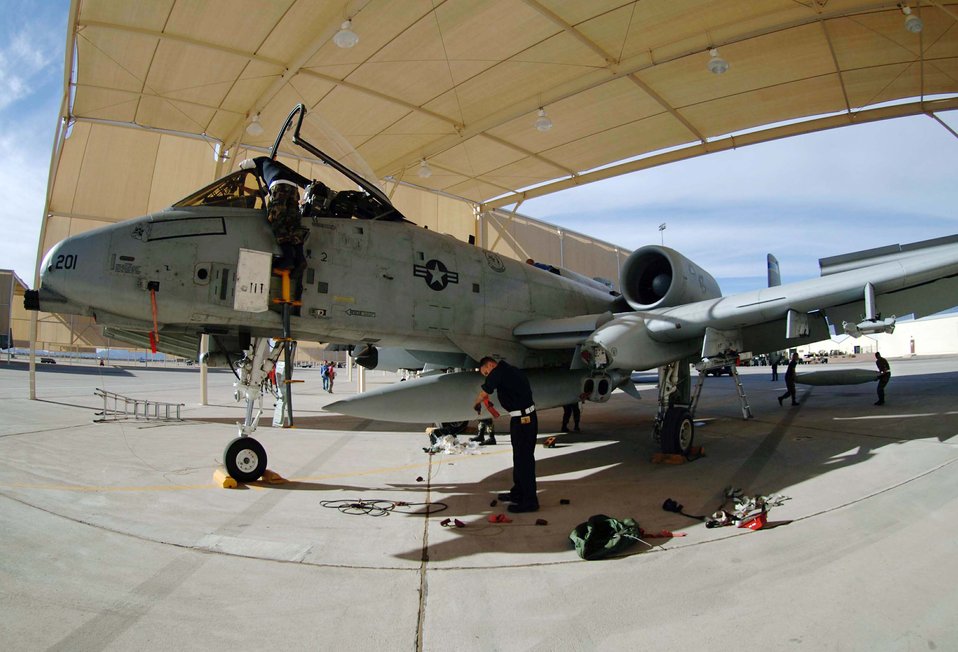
Home again

DAVIS-MONTHAN AIR FORCE BASE, Ariz. (AFPN) -- Crew chiefs with the 355th Aircraft Maintenance Squadron inspect an A-10 Thunderbolt II upon its return here Feb. 8. A-10s from the 354th Fighter Squadron were deployed to Bagram Air Base, Afghanistan, in support of Operation Enduring Freedom.